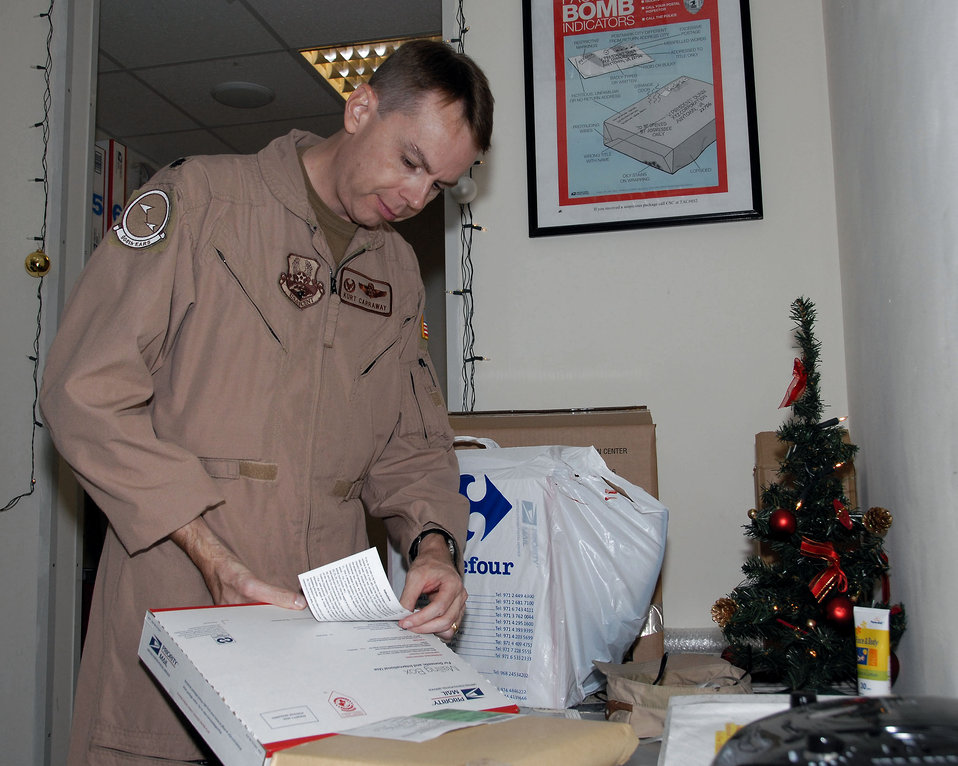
Letters, packages to Airmen increases during holiday season

Lt. Col. Kurt Carraway prepares a holiday package in the customer-service area of the 380th Air Expeditionary Wing Post Office Dec. 9 at an air base in Southwest Asia. Colonel Carraway is mailing a package to his family in St. Louis. The package is one of many processed by the post office staff totaling nearly a million kilos of mail since the beginning of the year. Colonel Carraway is the 380th Expeditionary Operations Group deputy commander.